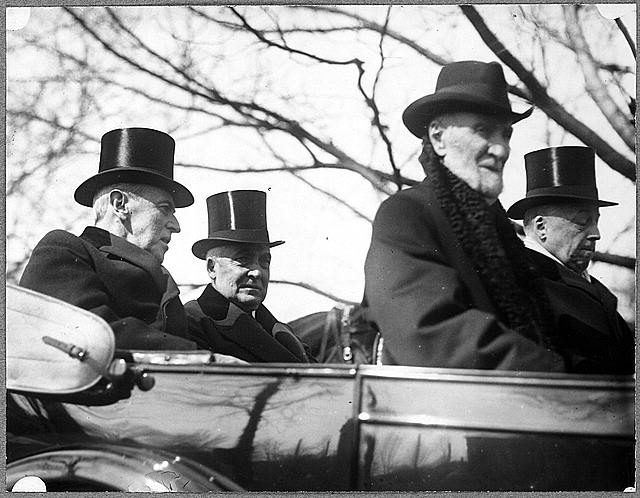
Philander C. Knox, U.S. Secretary of State at Warren Harding's inauguration.

Philander C. Knox, pictured front left, U.S. Secretary of State 6 March 1909 to 5 March 1913.

From lcweb2.loc.gov/cgi-bin/query/f?fsaall,app,brum,detr,swann...: